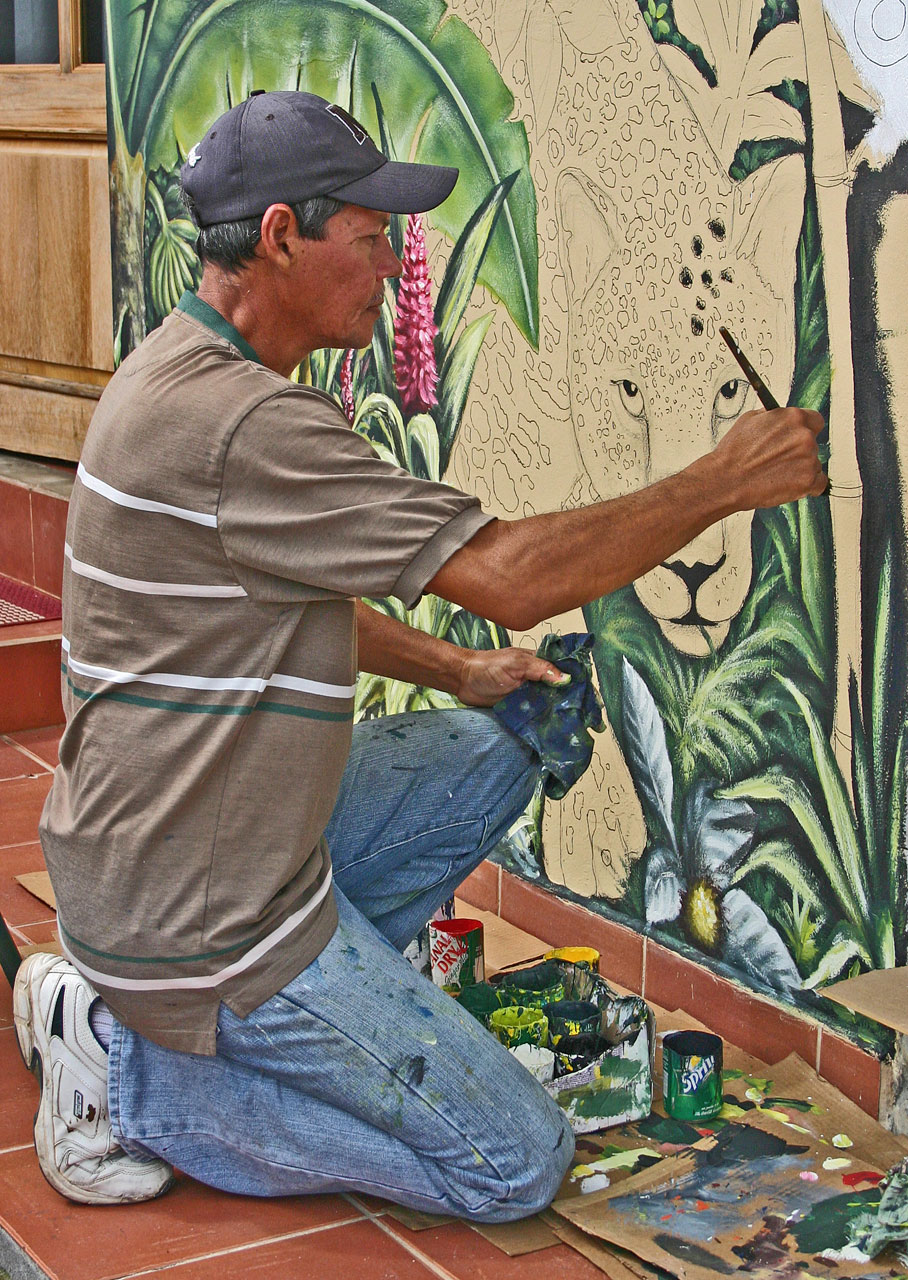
The muralist

Artist in panama.